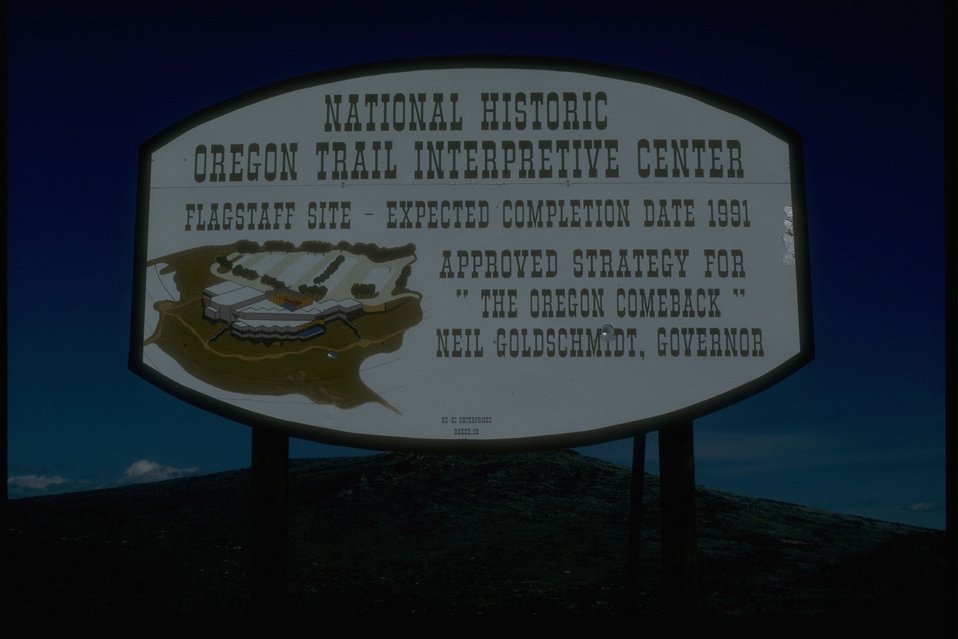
NHOTIC sign reading: National Historical Oregon Trail Interpretive Center. Flagstaff Site - Expected Completion Date 1991. Approved Strategy for "The Oregon Comeback". Neil Goldschmidt, Governor